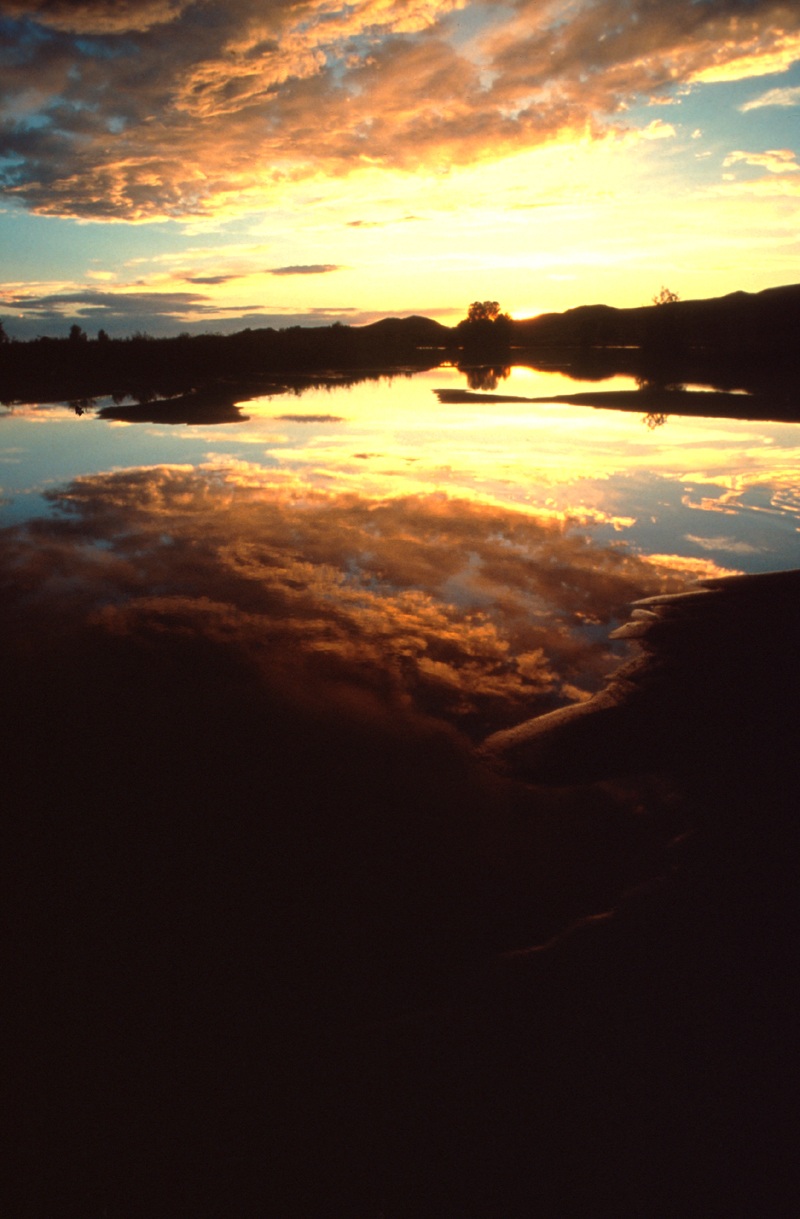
South Fork of the Snake River